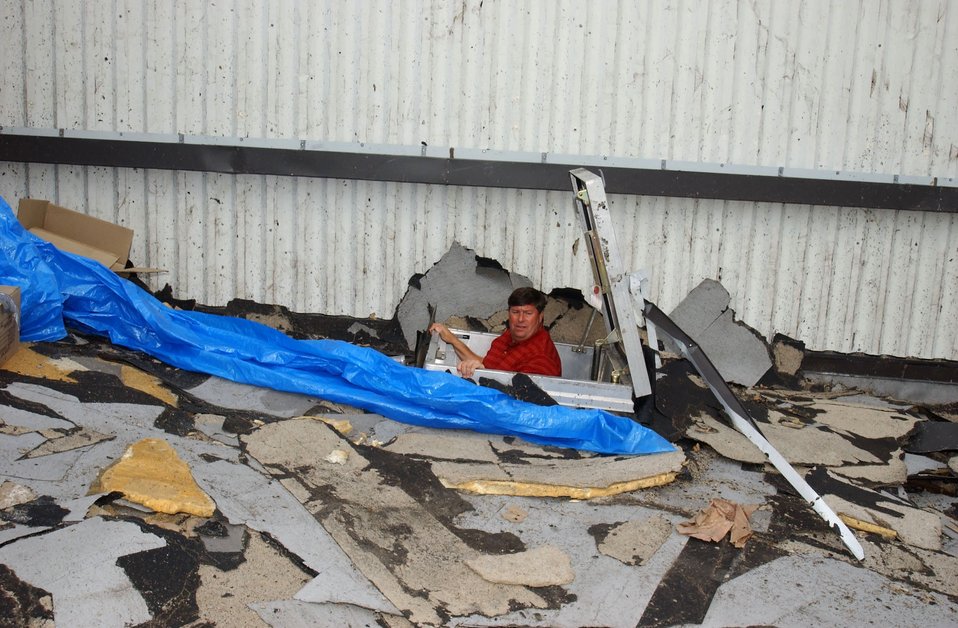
Rebuilding of Hurricane Hunters' home begins

KEESLER AIR FORCE BASE, Miss. -- Craig Branning examines the roof of Hangar 5 here. As part of Air Force Reserve Command's assessment team visit Sept. 20, Mr. Branning worked with the 403rd Wing to help plan and prioritize repairs and rebuilding at the battered base that endured 150-mph winds and storm-surge flooding.